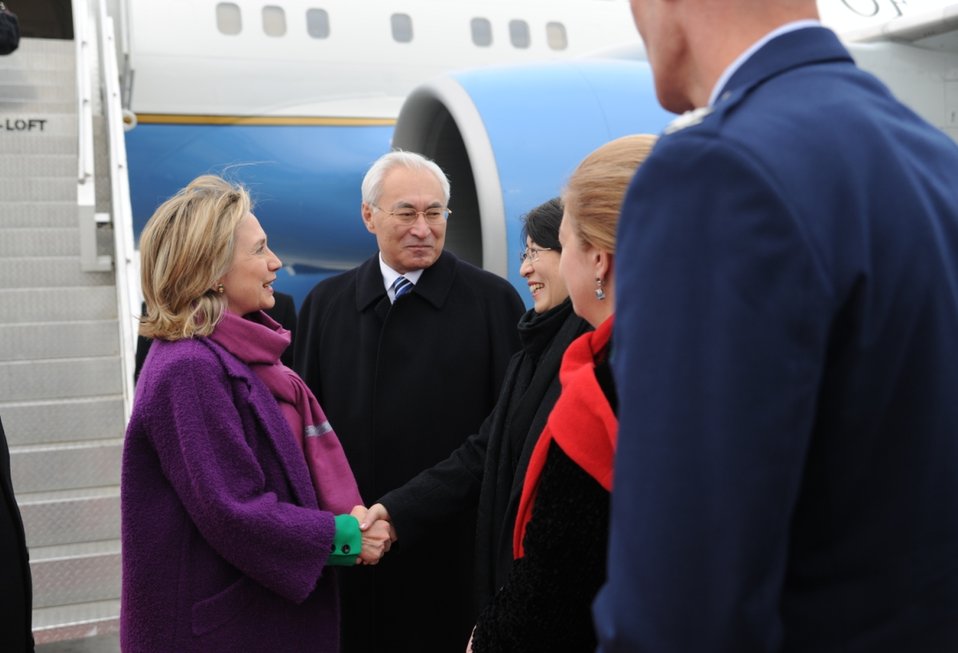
Secretary Clinton Is Greeted By Kyrgyz Deputy Foreign Minister Kemelova

U.S. Secretary of State Hillary Rodham Clinton is greeted by Kyrgyz Deputy Foreign Minister Dinara Kemelova in Bishkek, Kyrgyzstan, on December 2, 2010.